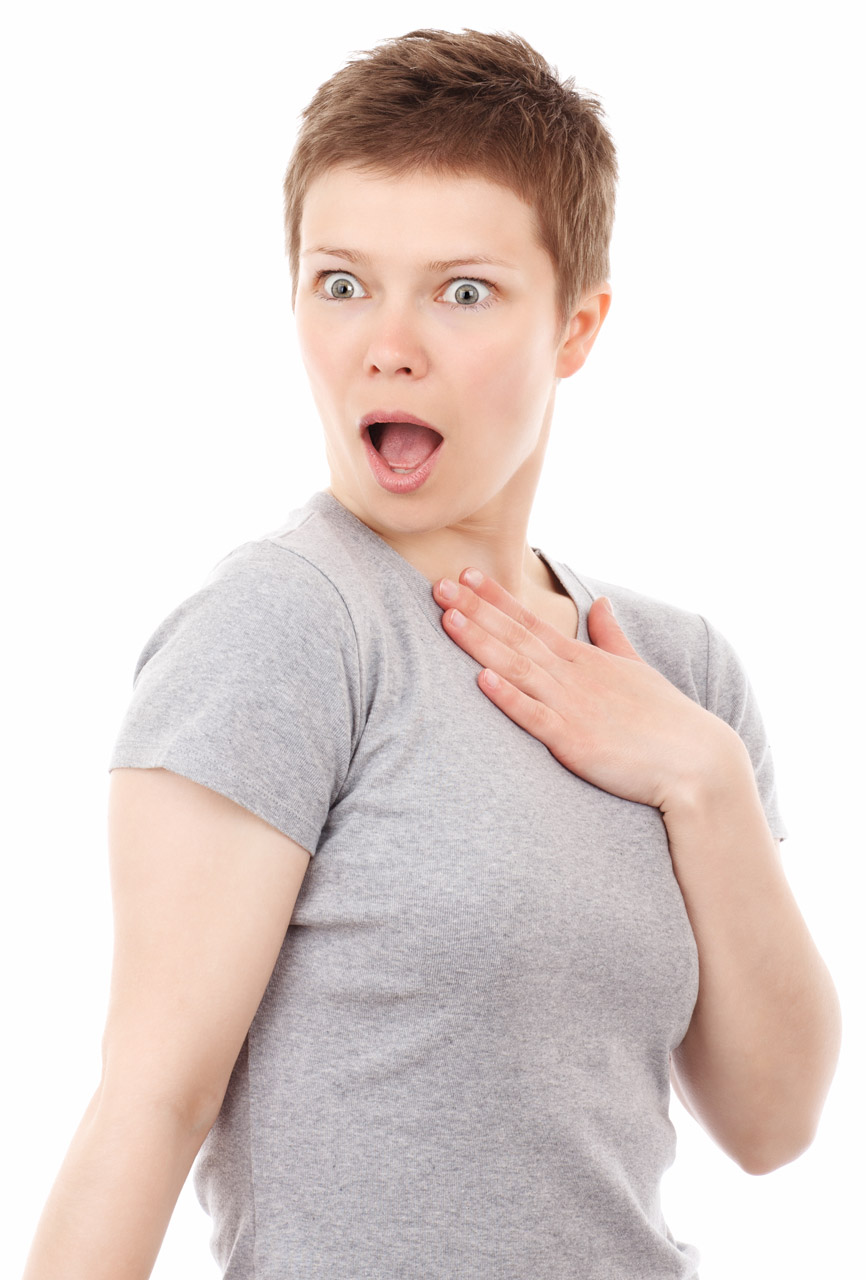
Surprise surprise

Surprised young woman isolated on white background.